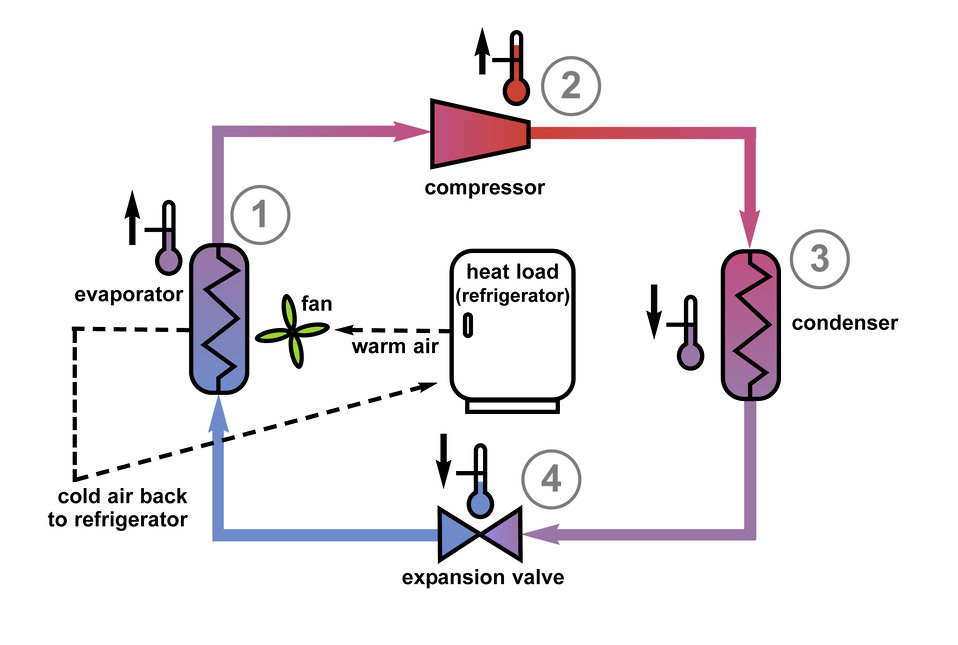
Refrigeration

Conventional and magnetic refrigeration cycles use different physical effects to cool things off. Top image: When a gas is compressed (2), it heats up, but if it is cooled and then allowed to expand (3), its temperature drops much lower than it was originally (4); this principle keeps food in your home refrigerator cool. But a magnetocaloric material (at bottom) heats up when magnetized (b); if cooled and then demagnetized (c), its temperature drops dramatically (d). NIST scientists may have found a way to use magnetocalorics in your fridge.